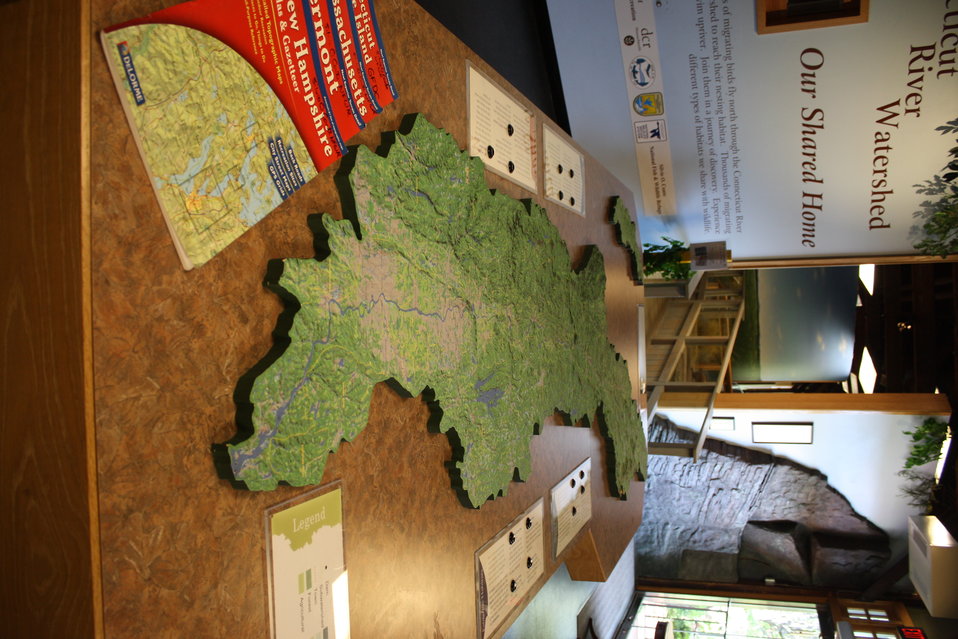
Map of Connecticut River Watershed

Inside the Great Falls Discovery Center, Turners Falls, MA.